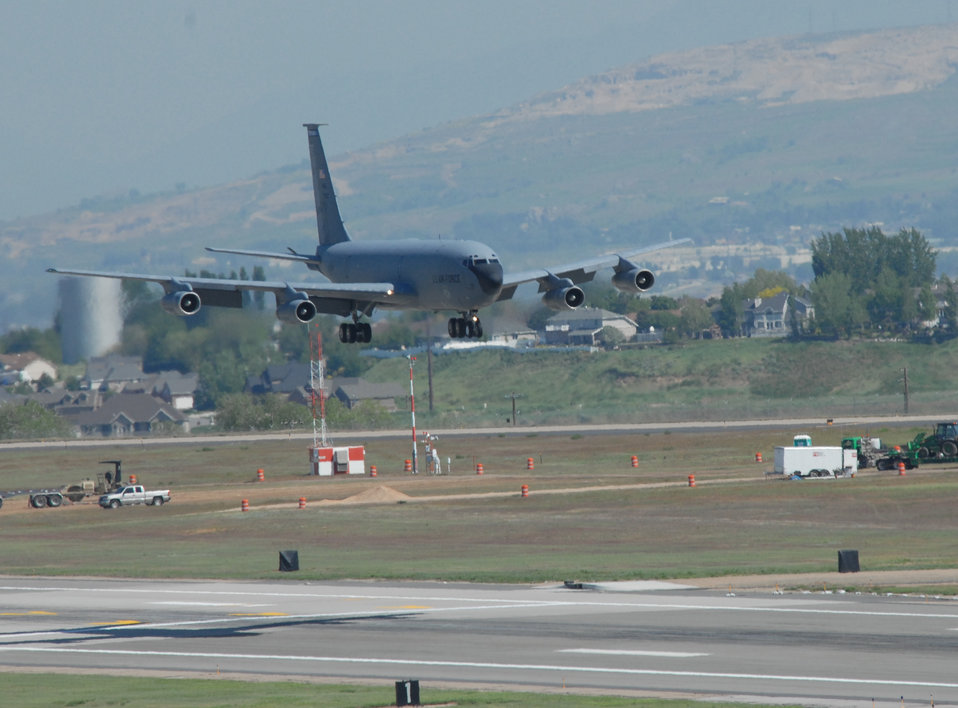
Farwell to Utah ANG's last KC-135 E-model

The last remaining KC-135 E-model Stratotanker assigned to the Utah Air National Guard's 151st Air Refueling Wing, was flown from the Air Guard base in Salt Lake City to nearby Hill Air Force Base where it was officially accepted into the Hill Aerospace Museum for public display.